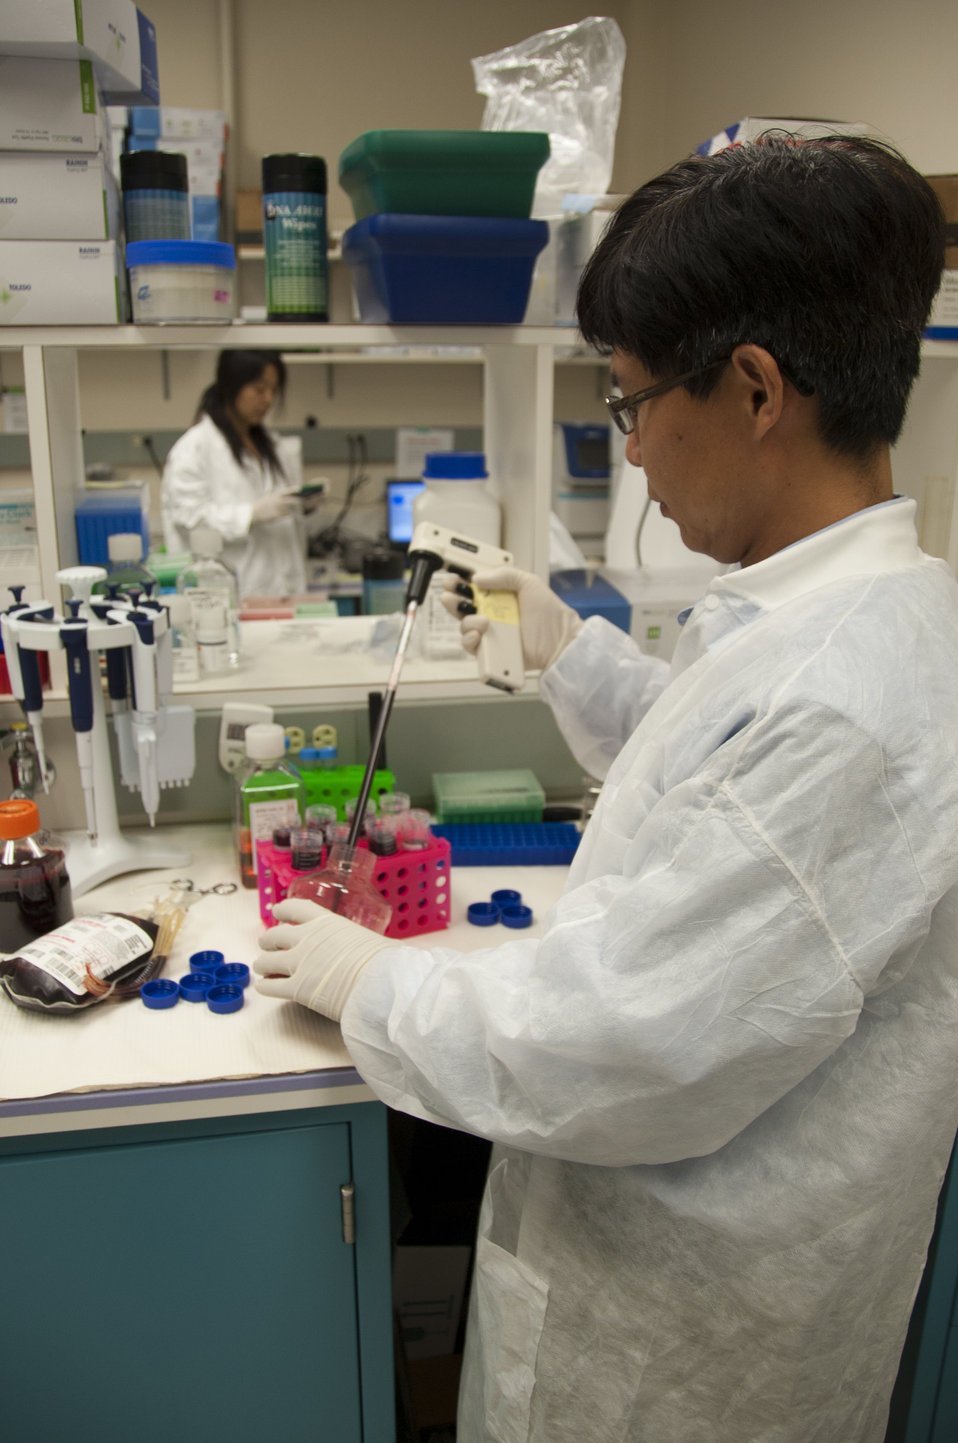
Blood Research: Saving Lives (8348)

Jason Liu, Ph.D., laboratory chief at FDA’s Office of Blood Research and Review, transferring blood to 50 ml tubes as he prepared to isolate blood components. A unit of whole blood can be separated, for example, into platelets and red blood cells. The separated components can be studied separately and can be used for different patients with different needs. FDA is responsible for the safety of our nation’s blood supply and is at the forefront of evaluating and encouraging innovative technologies for protecting it.

Read this Consumer Update to learn more: Advances in Saving Lives with Blood